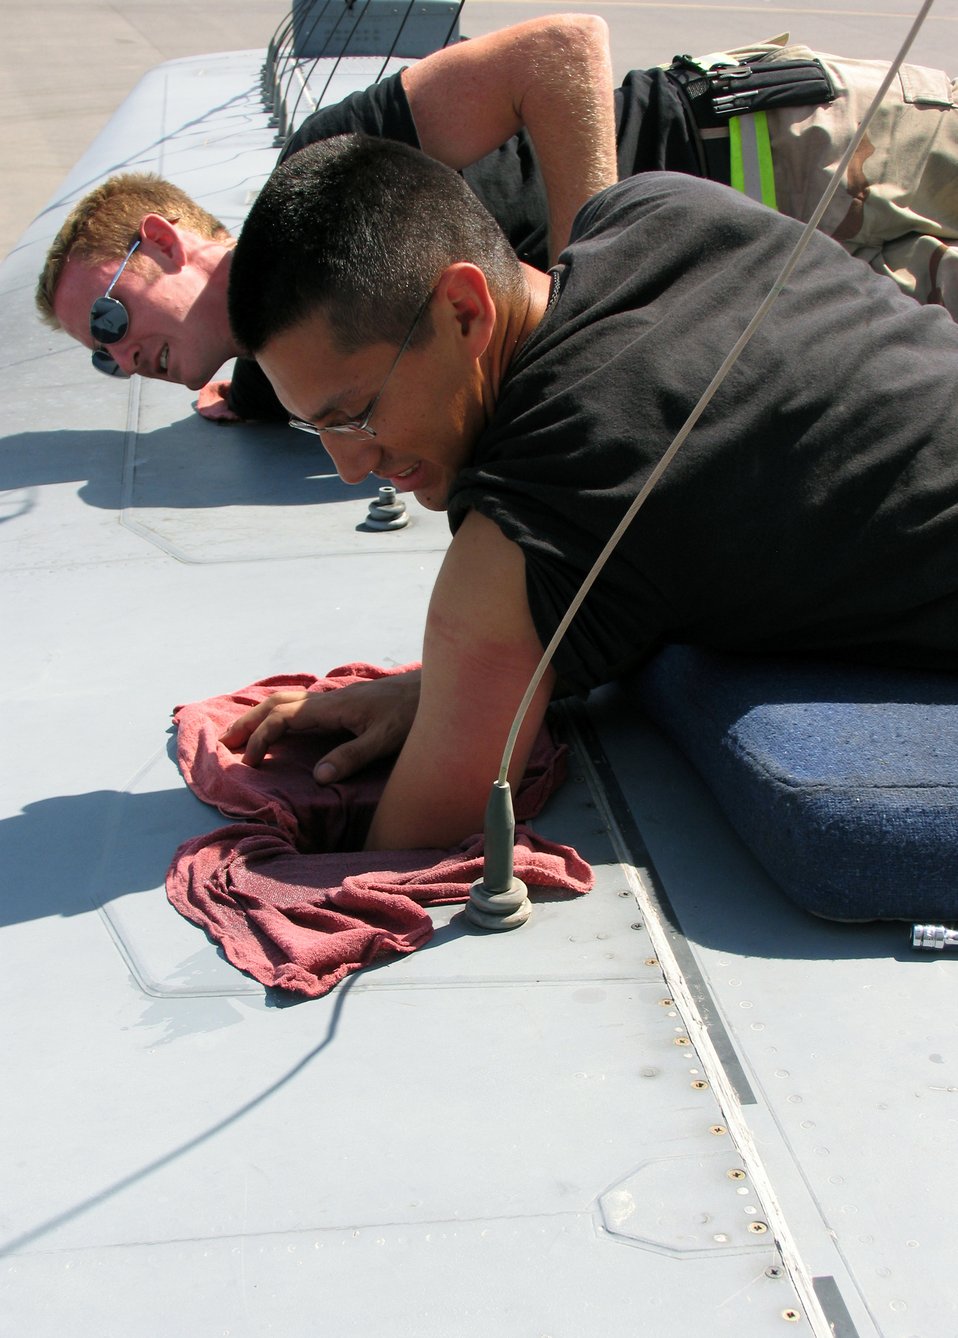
Maintaining the Hercules

Staff Sgt. Mauricio Moya and Airman 1st Class Joshua Rowles repair an antenna element on an EC-130 Hercules. Sergeant Moya is an aerospace propulsion mechanic and Airman Rowles is a crew chief. Both Airmen are deployed to the 386th Expeditionary Aircraft Maintenance Squadron at a base in Southwest Asia.